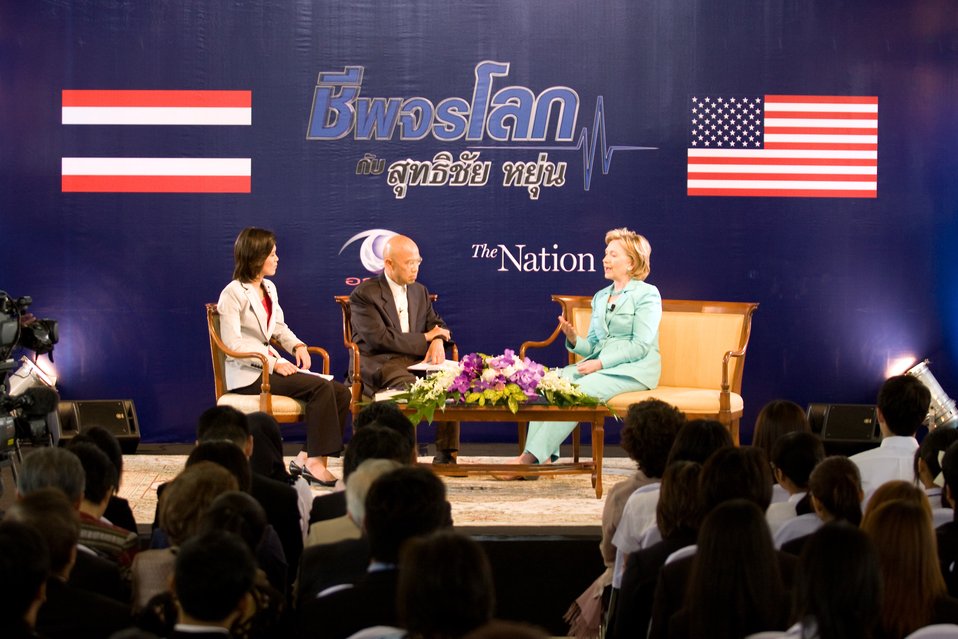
Secretary Clinton Interviews With the Nation Group

U.S. Secretary of State Hillary Rodham Clinton during an interview by Suthichai Yoon and Veenarat Laohapakakul at Phyathai Palace in Bangkok, Thailand July 22, 2009.